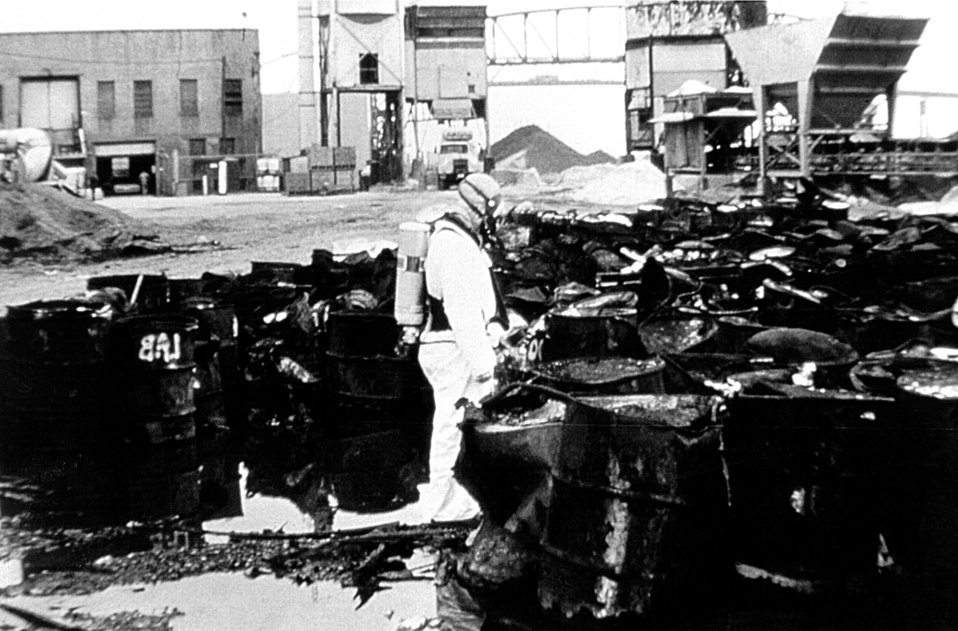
This was a hazmat technician analyzing the contents of a toxic waste dump while wearing a protective suit.